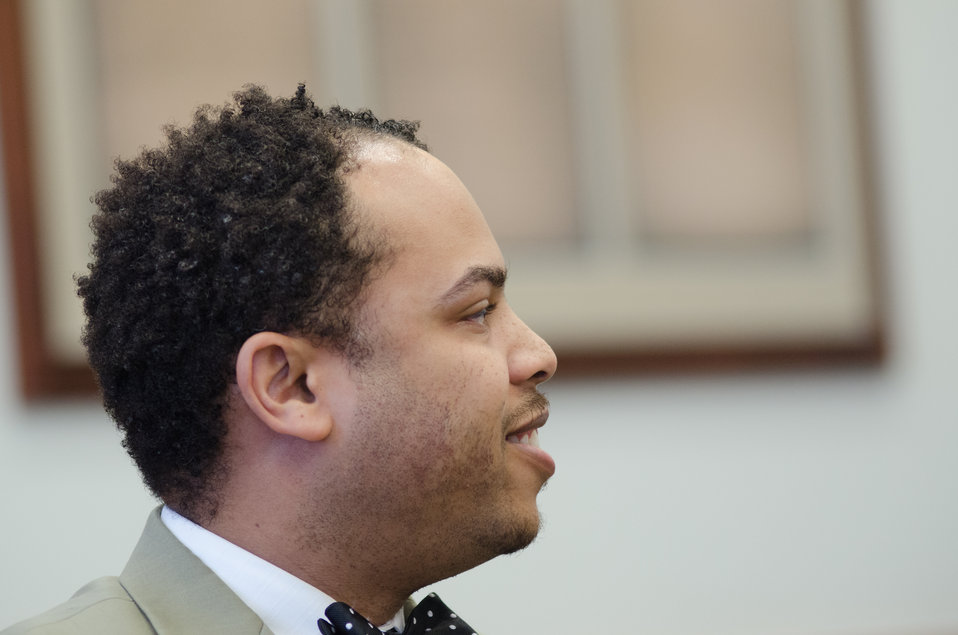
U.S. Department of Agriculture (USDA) Farm Service Agency (FSA) Confidential Assistant Leigh Allen, talks about his roll in the USDA, during a Brown Bag Lunch that Agriculture Secretary Tom Vilsack periodically has with employees, in his conference room, on Tuesday, April 9, 2013, in Washington, D.C.